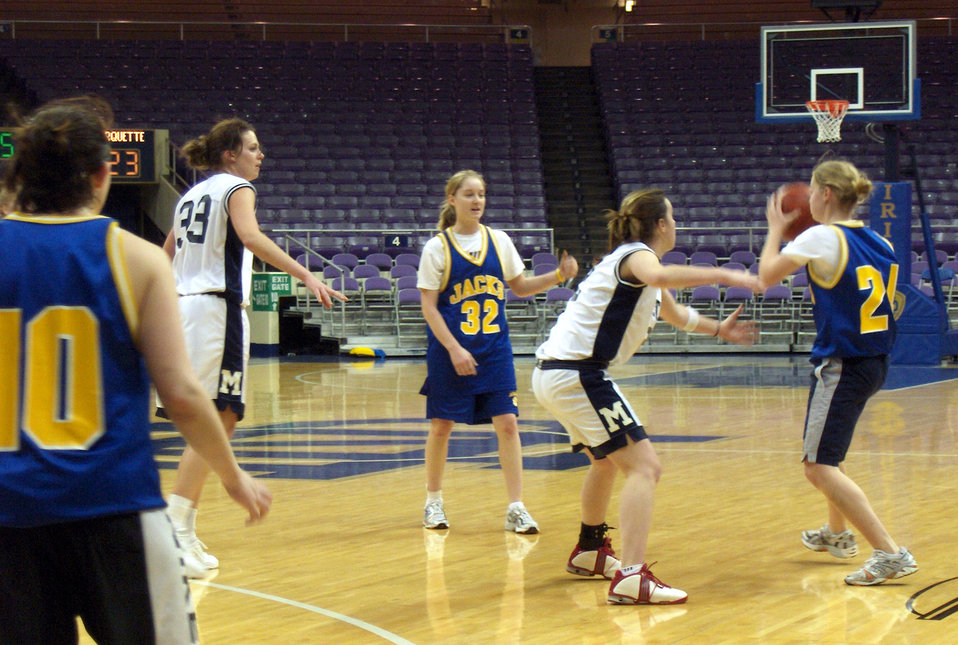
56 teams compete at ROTC basketball tourney

SOUTH BEND, Ind. -- Cadets from the South Dakota State University Air Force team work the ball around the defenses of the Marquette University Army team during the championship game of the 19th Flying Irish Basketball Invitational here Feb. 6. The SDSU team bested the Marquette team, 26-23. The tournament, which featured 54 teams this year, is the nation's largest athletic ROTC event.